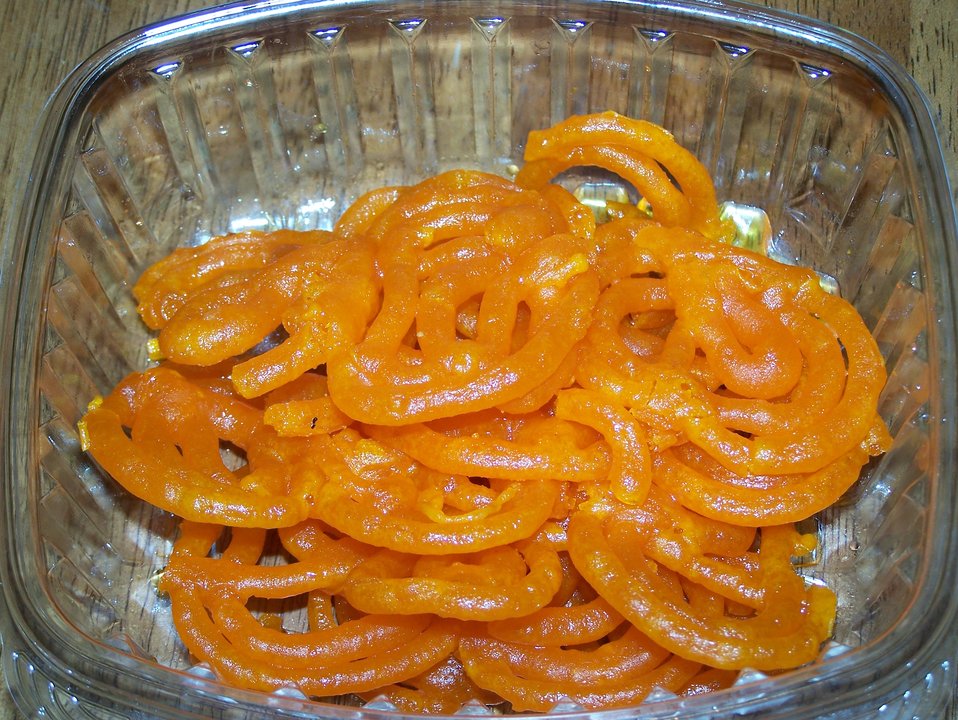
Jalebi